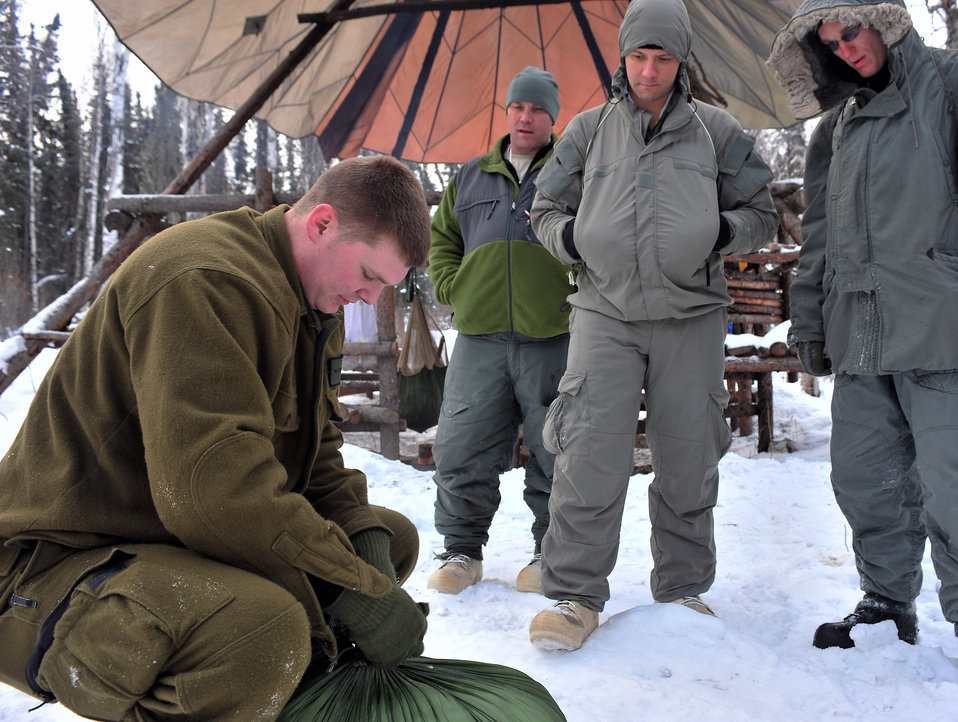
Learning survival skills in 'Cool School'

Senior Airman Jess Evans demonstrates making a door plug Feb. 25 at Eielson Air Force Base, Alaska. A door plug is used to insulate the opening of a thermalized A-frame shelter. Airman Evans is an Arctic Survival School instructor.